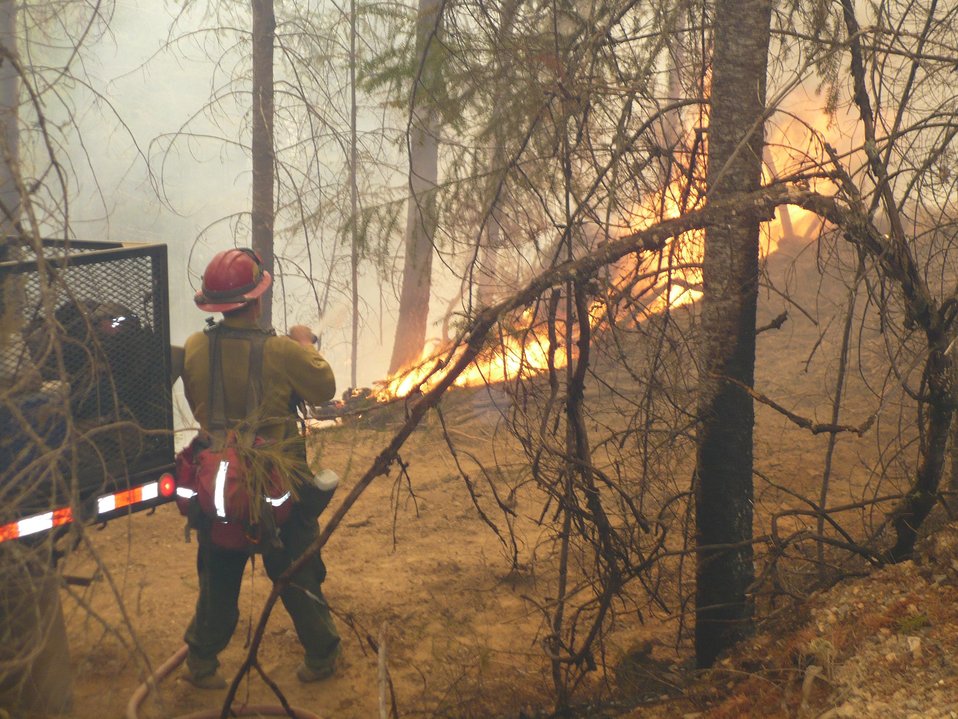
Firefighter uses water hose on the Brimstone Fire in Oregon. The Brimstone Fire near Merton, OR began on Jul. 26, 2013 began by lightning consumed 2,372 acres and is 100% contained.